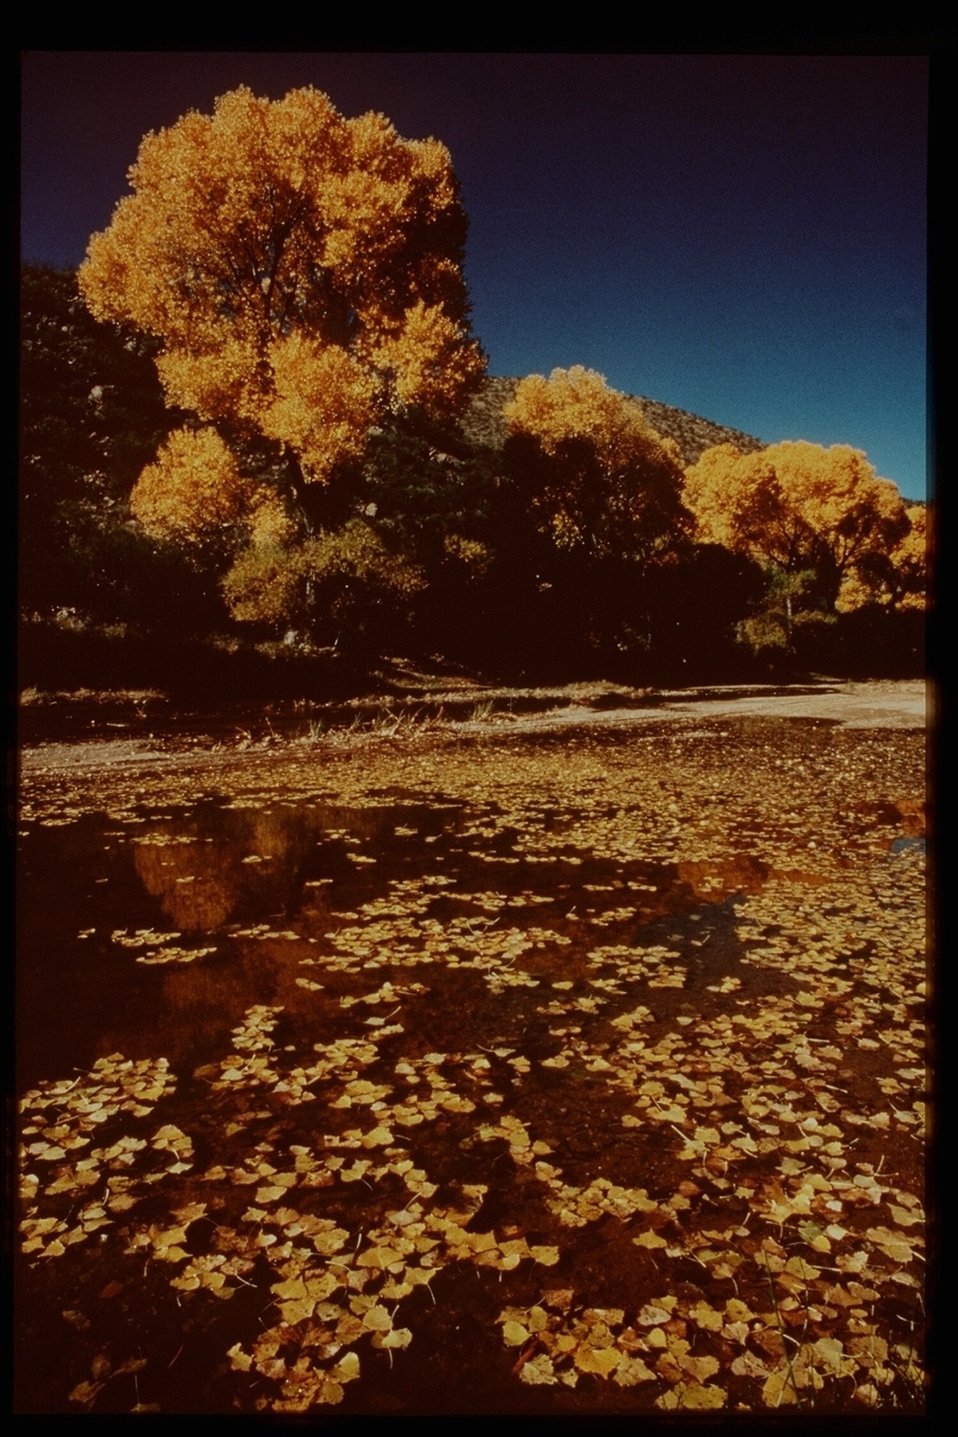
The San Pedro Riparian National Conservation Area, containing about 40 miles of the upper San Pedro River, was designated by Congress as a National Conservation Area (NCA) on November 18, 1988.